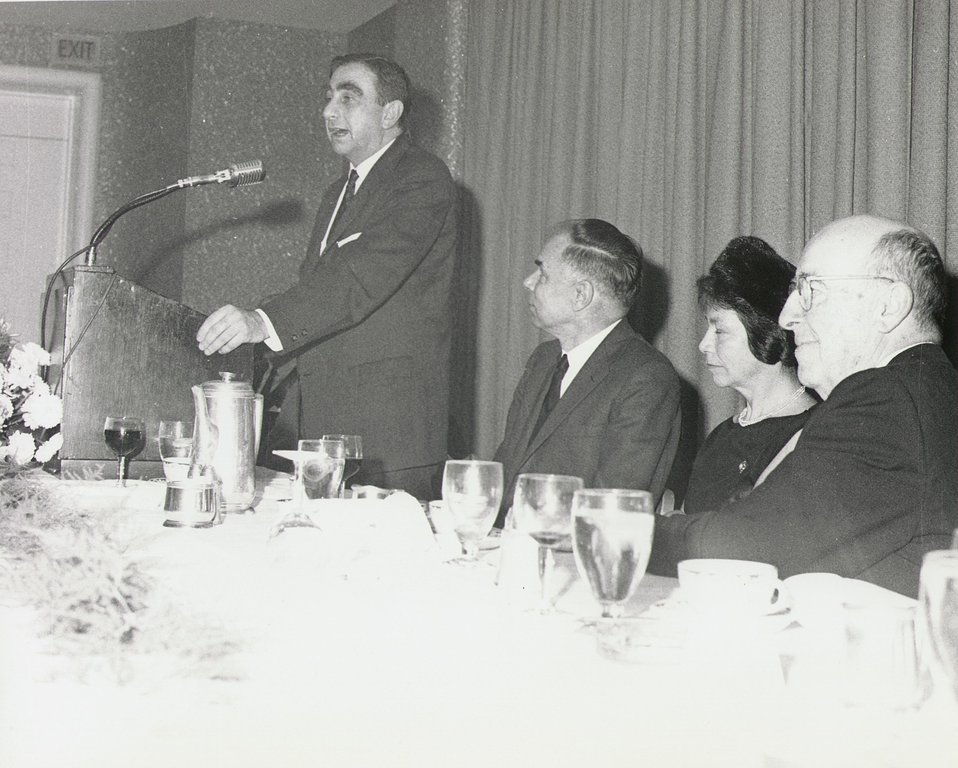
Fermi Award Ceremony for Teller in 1962.